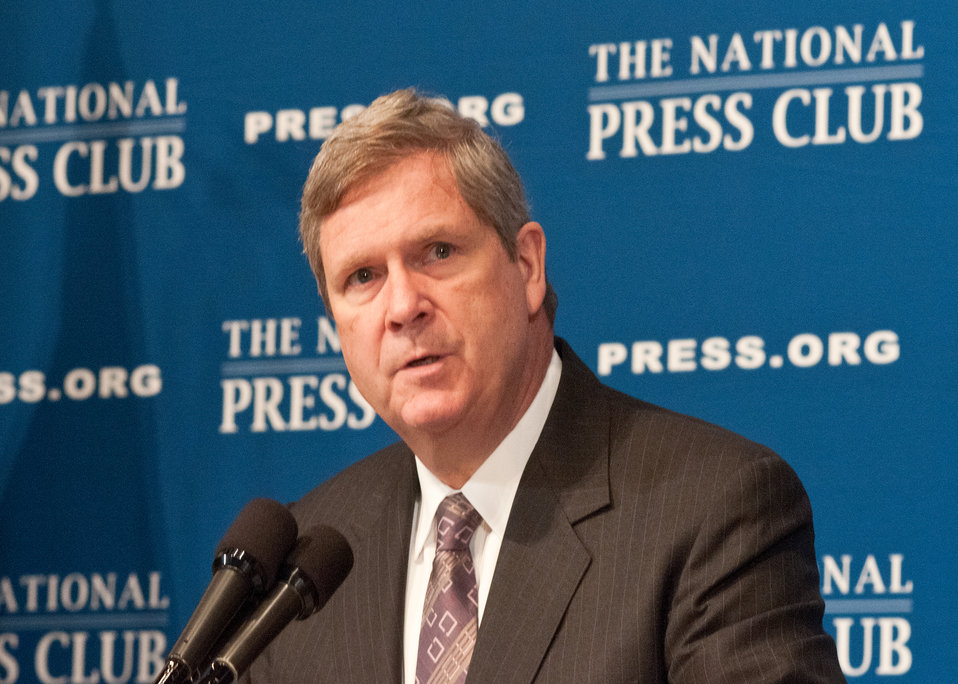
Agriculture Secretary Tom Vilsack spoke to journalists and national agriculture leaders about Innovation in American Agriculture, Sustainable Solutions to Help Feed the World at the National Press Club in Washington, DC, Monday, June 13, 2011 prior to attending the G20 Summit in France with global agriculture leaders. Secretary Vilsack mentioned in his speech, 'As we look to the future, this challenge grows even more stark. The global population is on the rise and strong economic growth in developing countries is expanding middle classes and increasing demand for agricultural products. We will have to increase food production by 70 per cent to feed a larger, richer global population of 9.3 billion by 2050. What's more, agriculture will play a role in meeting the growing demand for energy – which is expected to increase by more than 40% by 2035.”